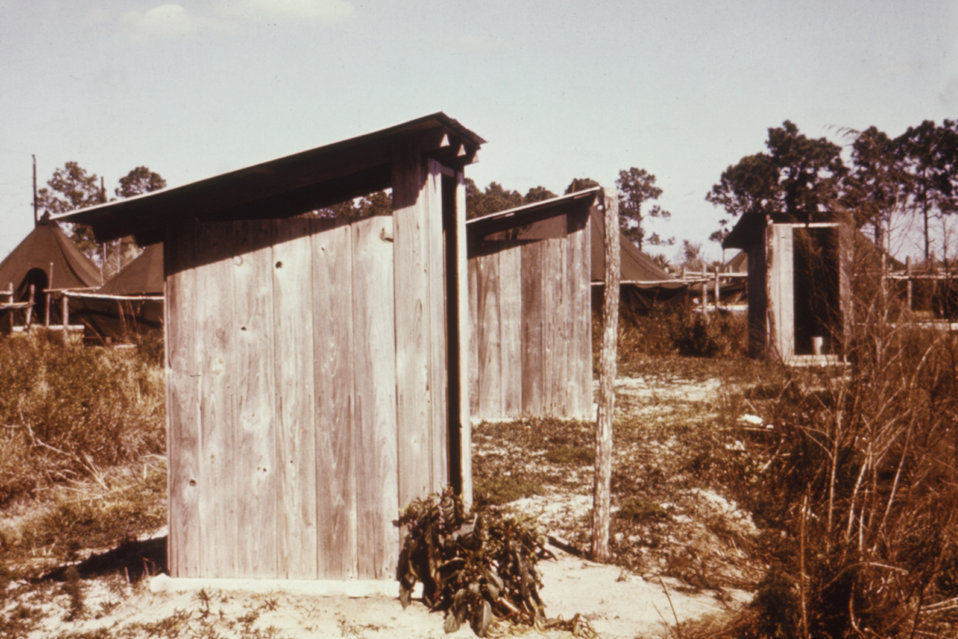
This was part of a series used to familiarize public health inspectors with sanitation conditions in migrant worker camps.